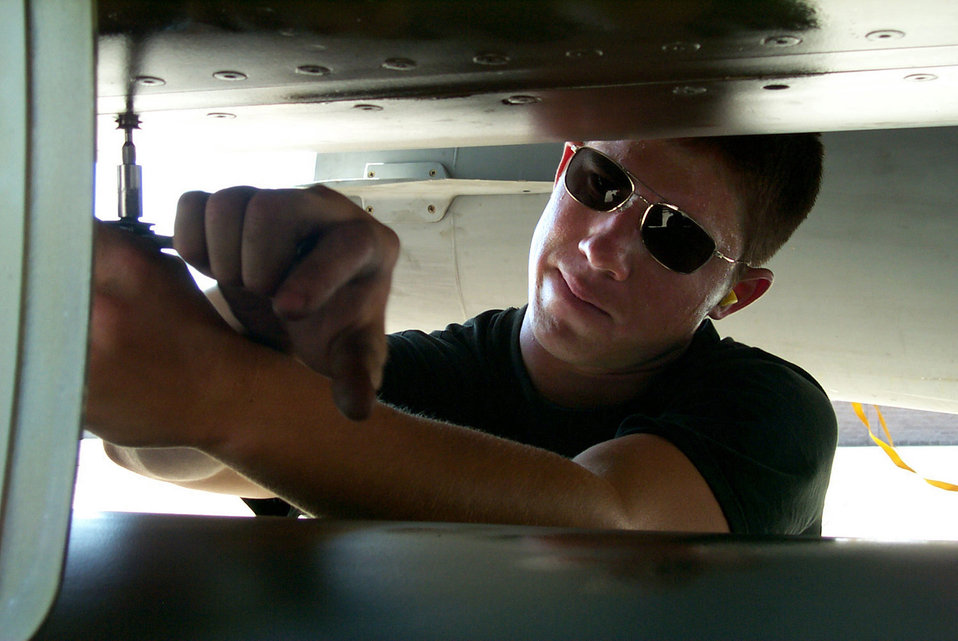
Filter change

NELLIS AIR FORCE BASE, Nev. -- Airman 1st Class Joel Nicholson, 22nd Fighter Squadron crew chief deployed from Spangdhalem Air Base, Germany, closes a panel on an F-16 Fighting Falcon after replacing a filter. The 22nd is deployed here participating in Red Flag air-to-air combat training.